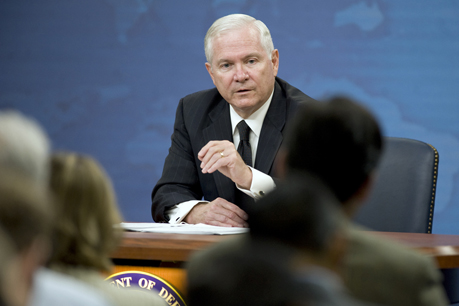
Secretary Gates announcement

Defense Secretary Robert M. Gates conducts a press conference at the Pentagon Aug. 9, 2010. He said he is taking steps to help the U.S. military fight the wars it faces now, and help ready the force for the wars it may face in the future. With these moves, the secretary said, he wants to instill a culture of saving in the department.